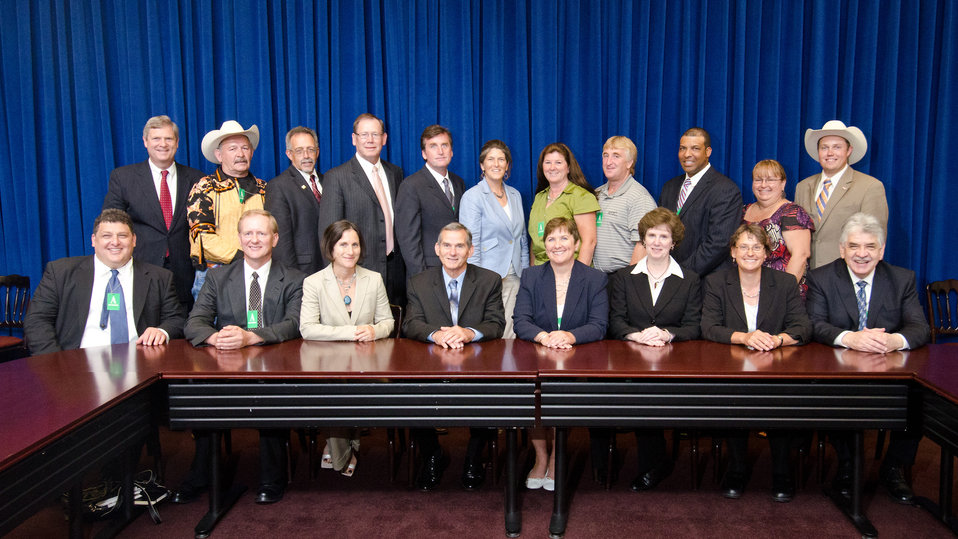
(Back row, left to right) Agriculture Secretary Tom Vilsack, Ross Racine, Bruce Ward, Everett Max Dobrinski, Rick Huszagh, Crista Carrell, Jacqueline Young, Glen Young, Philip Johnson Haynie, III, Linda Roberson, and Jason Frerichs. (Front row, left to right) Lance Morgan, Mark Timm, Deborah Kane, Eric Benjamin Rund, Ruth Hambleton, Sue Noble, Linda Barnes, and Roland Arriola attended a meeting at the White House, in Washington, DC, on Wednesday, Jul. 6, 2011. President Barack Obama, Secretary Vilsack, and the President's Domestic Policy Adviser Melody Barnes along with rural communities leaders from across the country came together for the White House Rural Champions of Change event whose aim is to strengthen rural communities and promote economic growth. Prior to coming here, they were posed with a question about, what should/should not the government be doing to strengthen rural communities and promote economic growth.